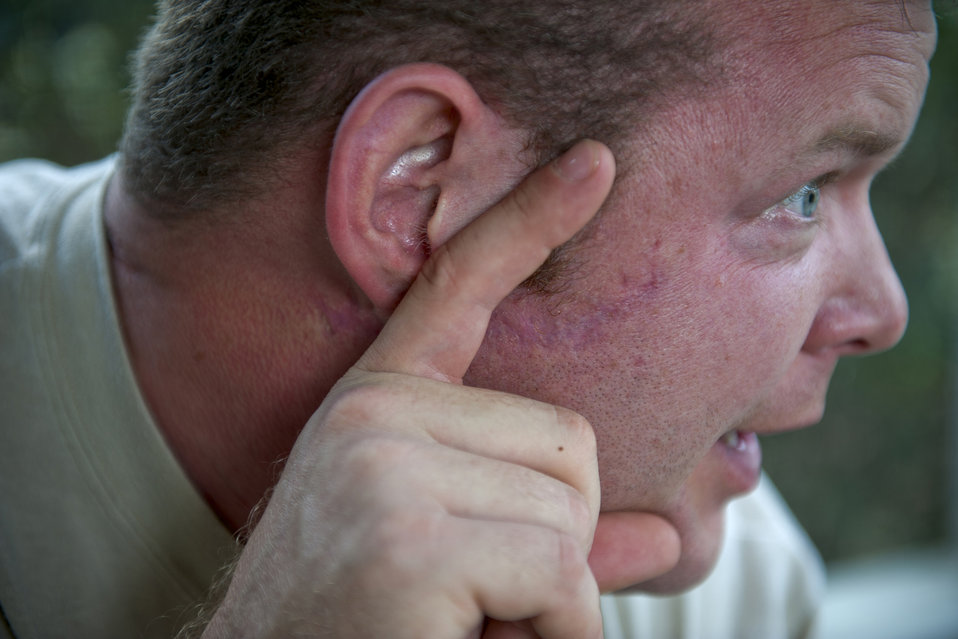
Scar face

VALDOSTA, Ga. -- Master Sgt. Robert Disney, 347th Rescue Group standards and evaluations superintendent, reenacts a firefight in which he received a gunshot wound to the face while deployed Feb. 24 at his home. Sergeant Disney received a Purple Heart on May 1, 2003, for his actions during the incident.